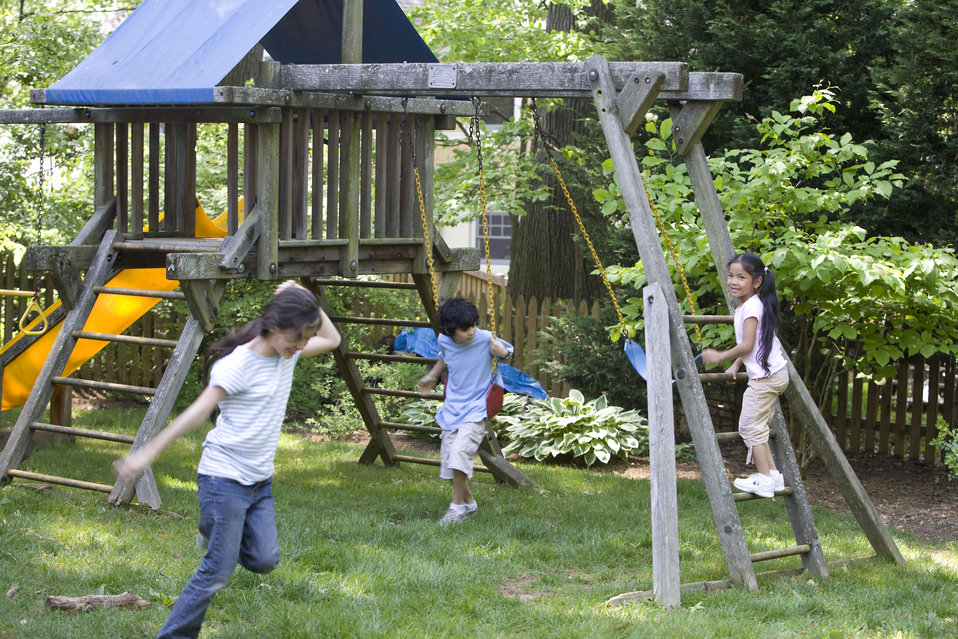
Children love playing outside, and these children were thoroughly enjoying their wooden swing set, and all were having fun in the fresh outdoor air, and the beautiful weather. It's important to note that older wooden playsets may have been treated with arsenic and/or creosote, and therefore, parents need to know if these chemicals were used in their manufacture.